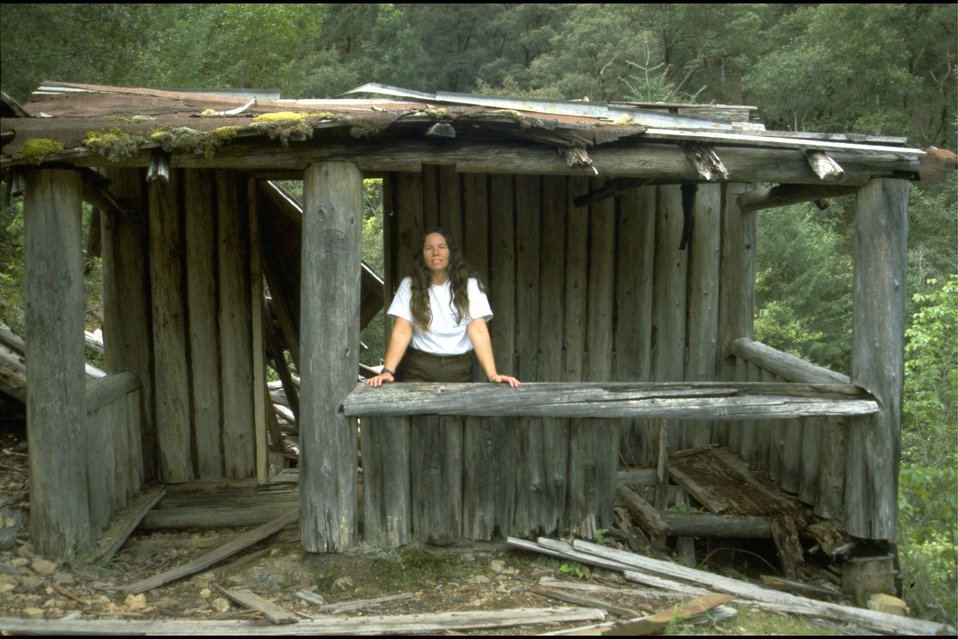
Rogue River - Wild Section. Cabin above Rainie.